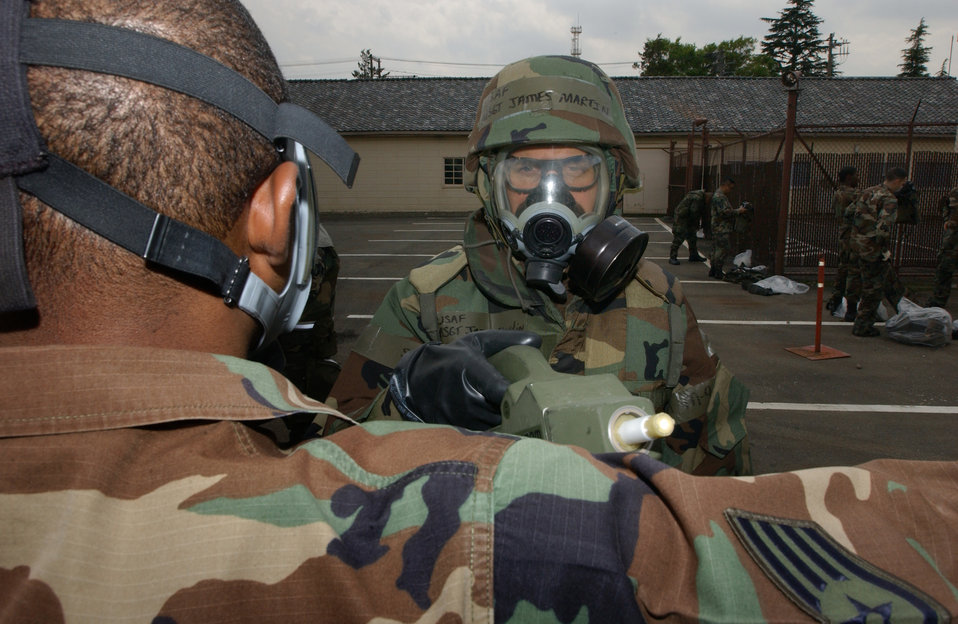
Infected or not infected?

YOKOTA AIR BASE, Japan -- Master Sgt. James Martin scans possibly contaminated Airmen with a chemical agent monitor as part of exercise Beverly Morning 05-05 here April 21. Sergeant Martin is assigned to the 374th Civil Engineer Squadron's readiness section.